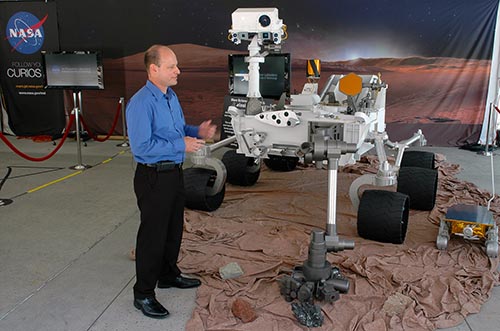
Engineering Development Operations Managers at NASA's Jet Propulsion Laboratory, stands next to a life-sized model of the Curiosity Rover on August 4, 2012, the day before the landing of the Rover on Mars.

The systems LANL helped develop are: ChemCam, ChemMin, and Multi-Mission Radioisotope Theremoelectric Generator Unit.